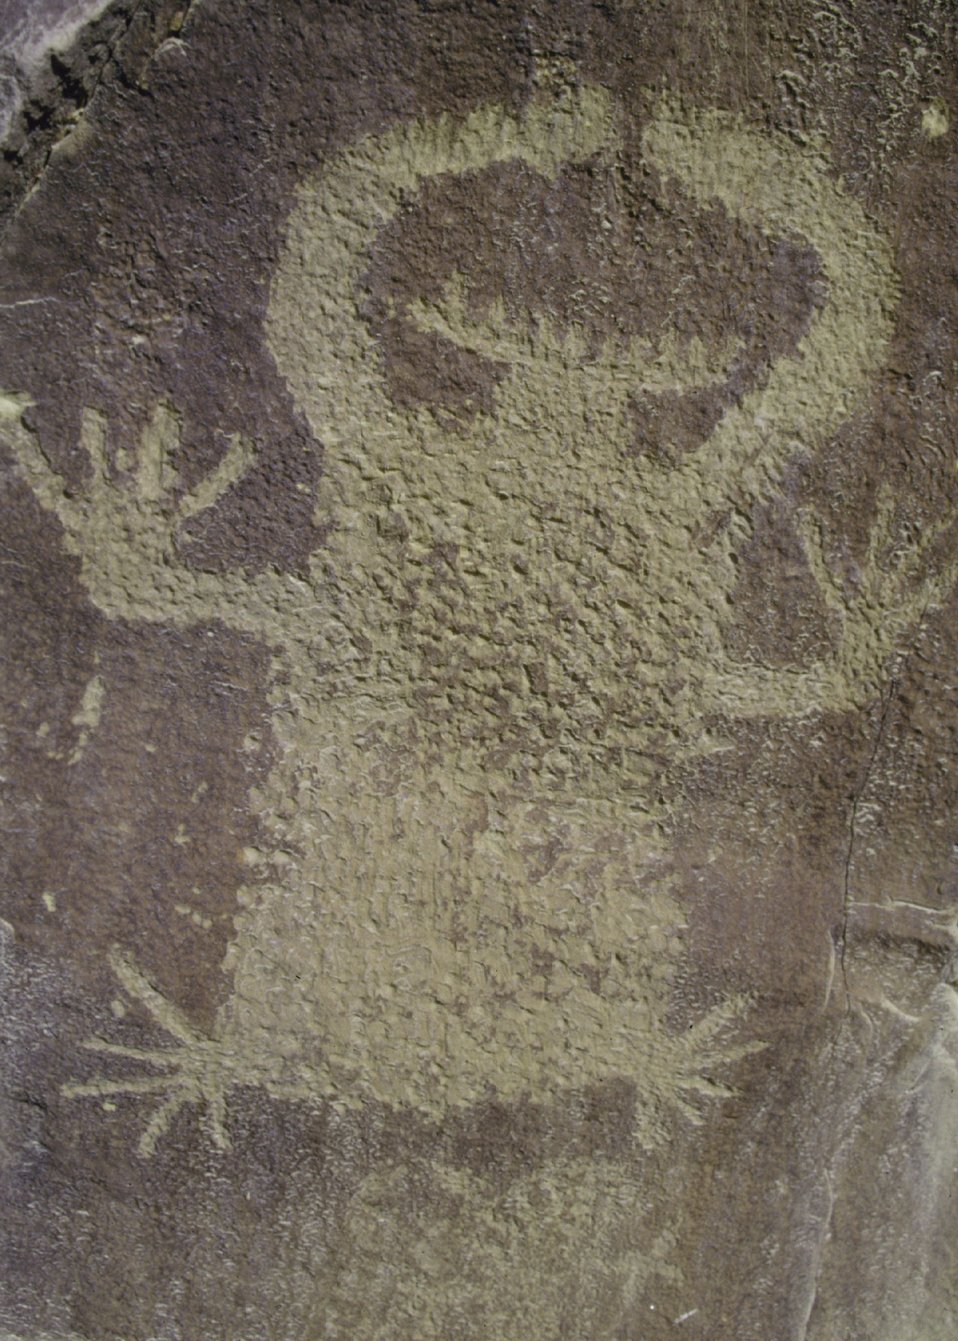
A petroglyph on Legend Rock in Big Horn Basin, Wyoming.